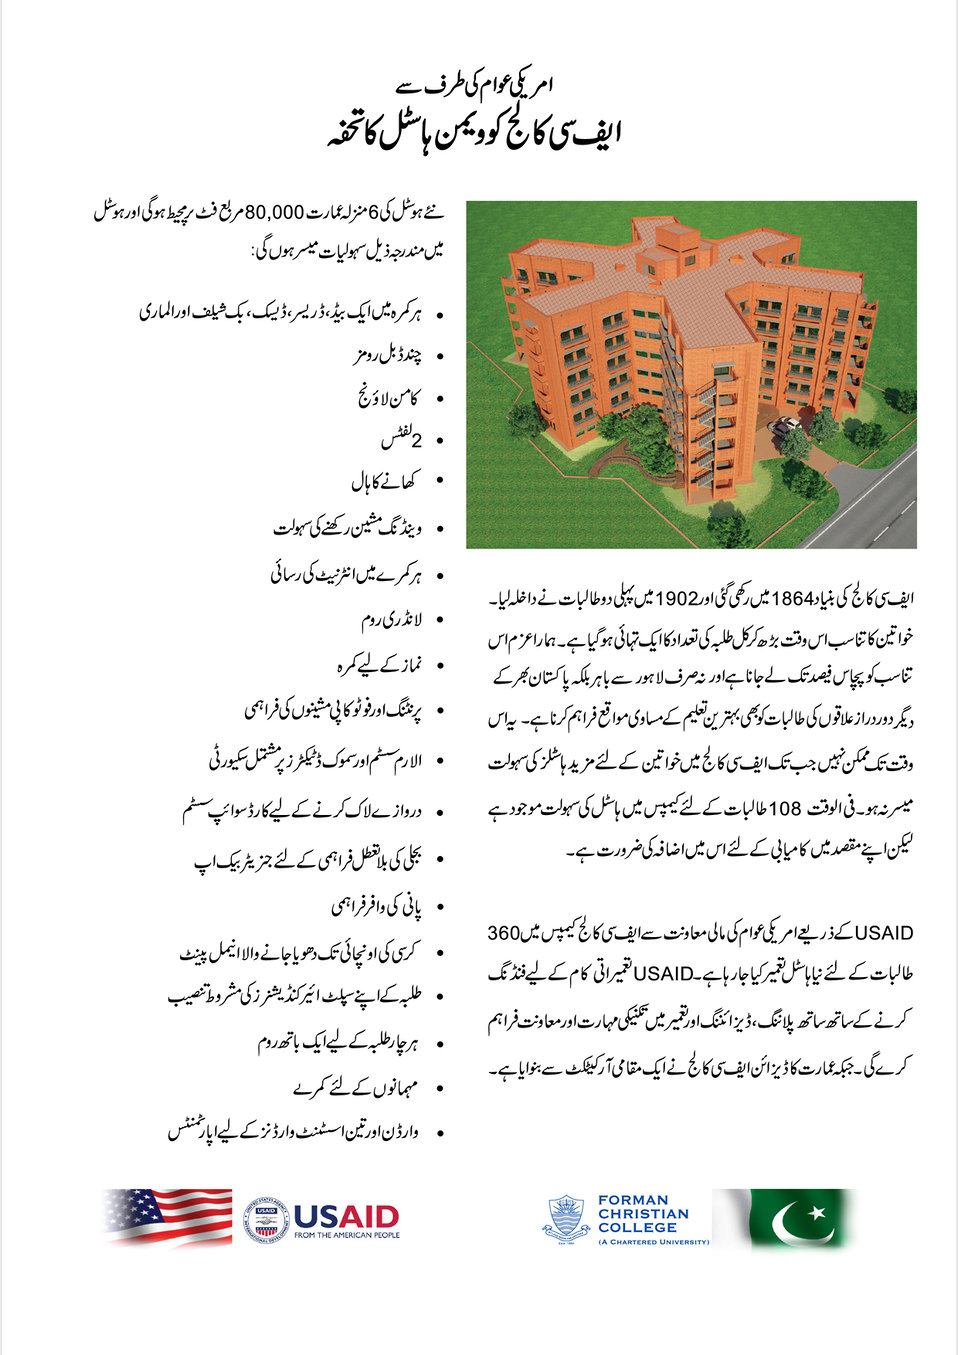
Groundbreaking ceremony for the USAID-funded women's hostel at Forman Christian College

Lahore May 29, 2012: U.S. Agency for International Development (USAID) Mission Director
Dr. Andrew Sisson and U.S. Consul General Nina Fite led the groundbreaking ceremony at the
new USAID-funded Women’s Hostel at Forman Christian College (FCC).